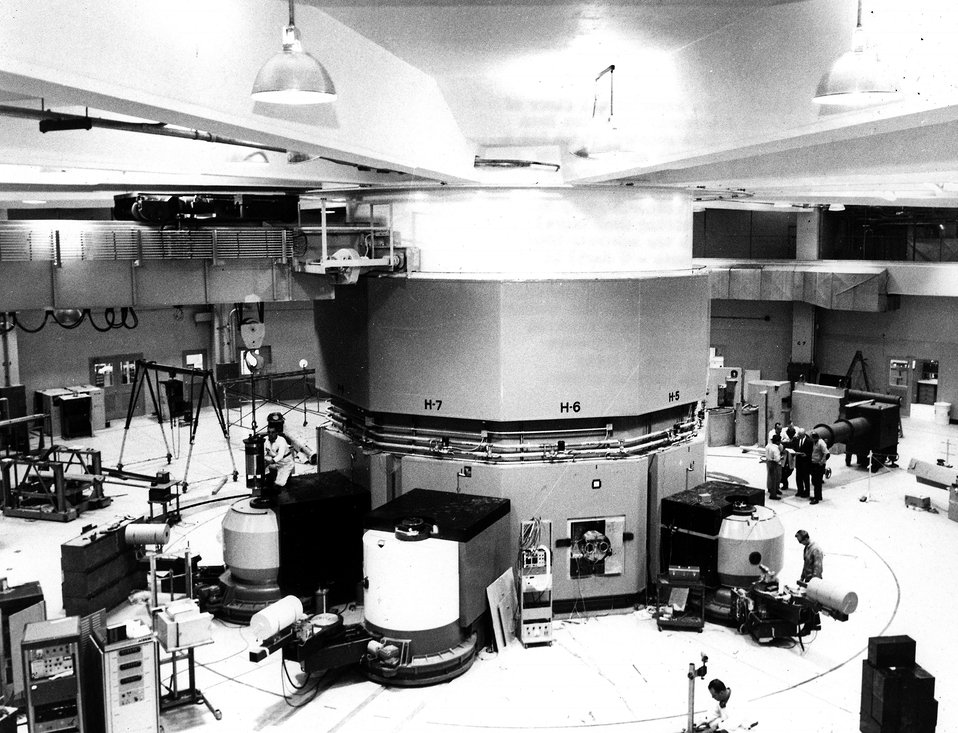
The experimental floor of the Brookhaven National Laboratory High Flux Beam Reactor (HFBR). This reactor, which has a maximum power of 40 million watts and a maximum neutron flux of 1.6 x 10(to the 15th power) neutrons per square centimeter per second. c. 1966